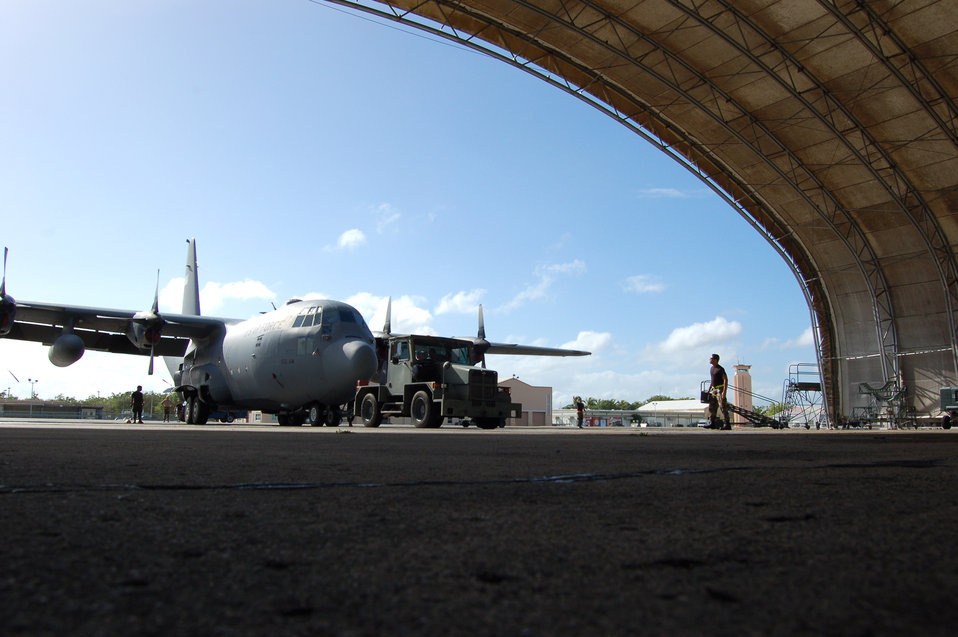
Puerto Rico Airmen support two wars

A maintenance crew wheels a C-130 Hercules into a hangar Dec. 15 at Mu?iz Air National Guard Base, Puerto Rico. Airmen of the 156th Aircraft Maintenance Squadron maintain the Air Force's oldest C-130s.